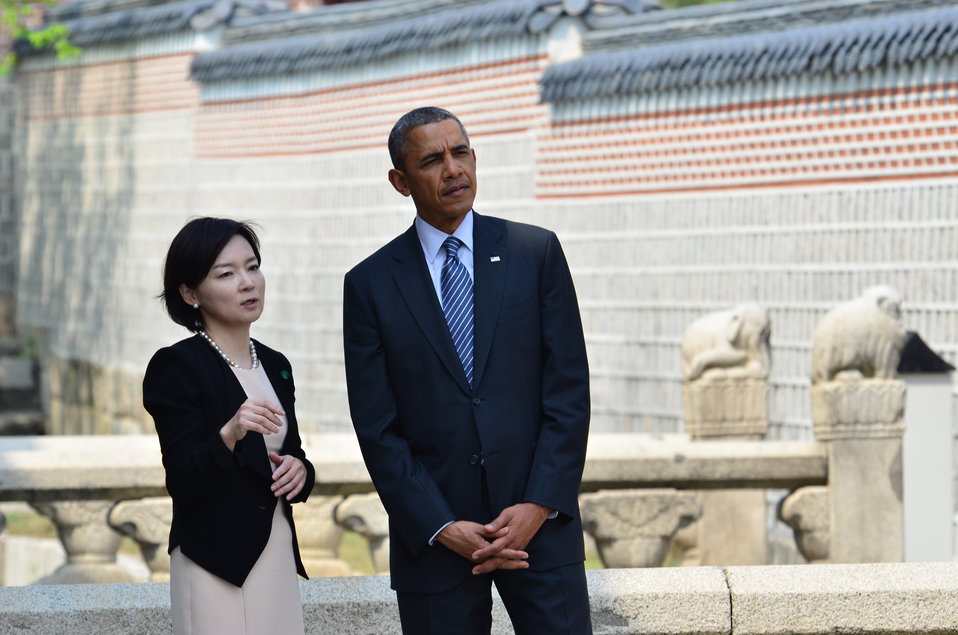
President Obama Visits Gyengbok Palace

President Barack Obama visits Gyengbok Palace with Professor Sang-mi Park from Division of International Studies, Hankuk University of Foreign Studies (HUFS) in Seoul, Republic of Korea on April 25, 2014.